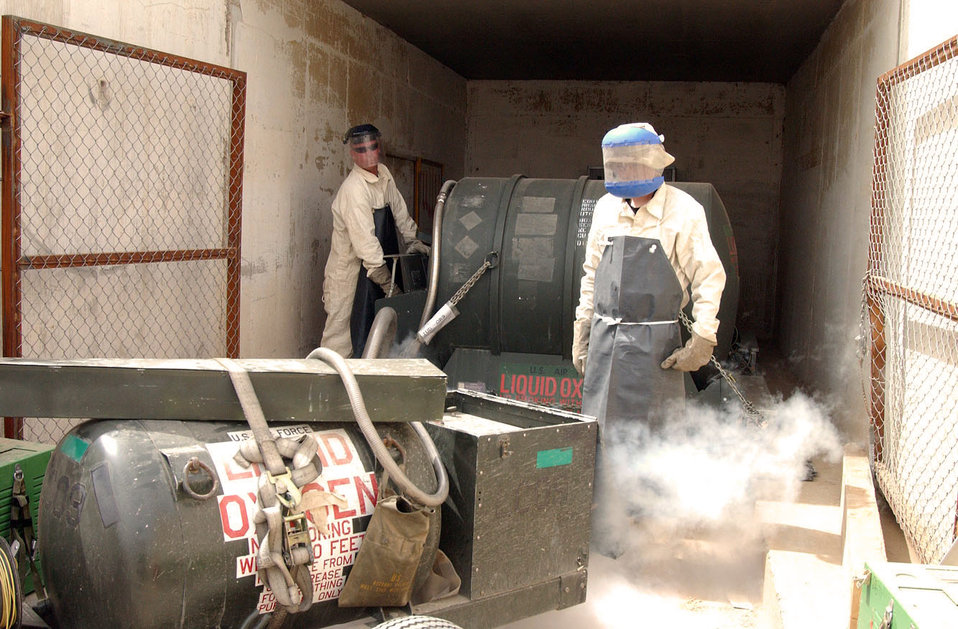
Fuels Airmen cultivate Balad farm

BALAD AIR BASE, Iraq -- Airman 1st Class Ben Merino monitors measures while issuing liquid oxygen as Tech. Sgt. Johnny Reagan makes sure everything is safe. While issuing liquid oxygen, a second person must stand by as a safety monitor in case something happens. The Airmen are assigned to the 332nd Expeditionary Logistics Readiness Squadron's fuels management flight here. They are deployed from Davis-Monthan Air Force Base, Ariz.